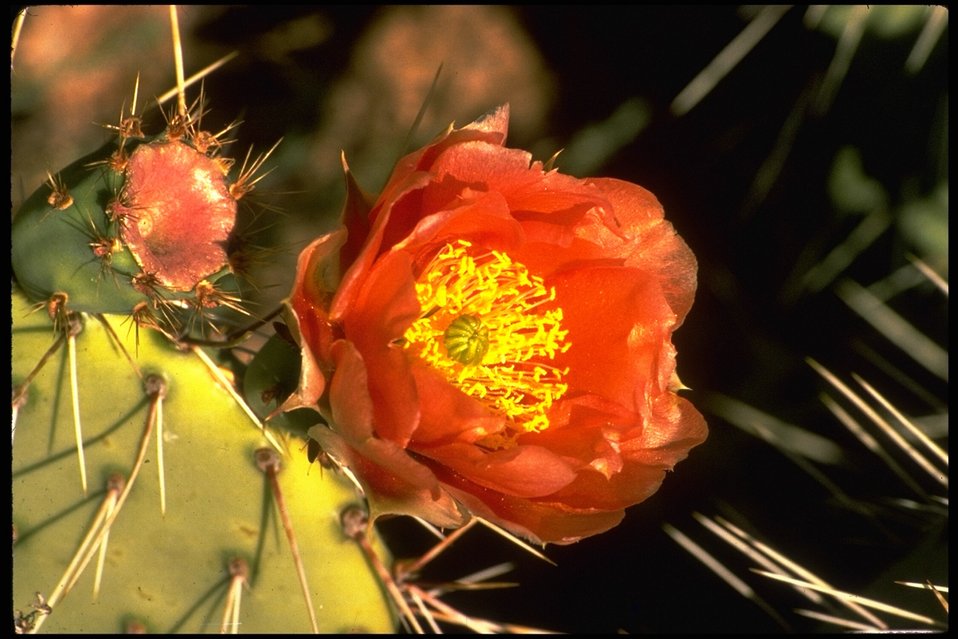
A flower in bloom on a Prickly Pear cactus.